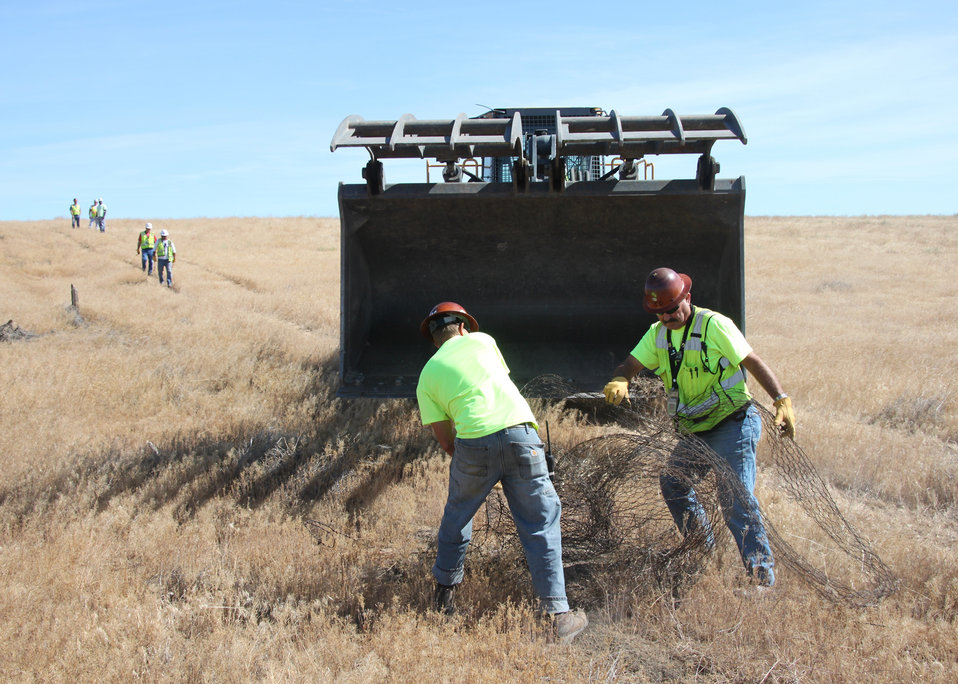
Recovery Act accelerated cleanup at Hanford

DOE contractor CH2M HILL Plateau Remediation Company partnered with Sealaska, a Native American-owned small business, to clean up debris in the 169 square mile area near Hanford's main facilities. The North Slope is located northeast of those facilities, across the Columbia River.